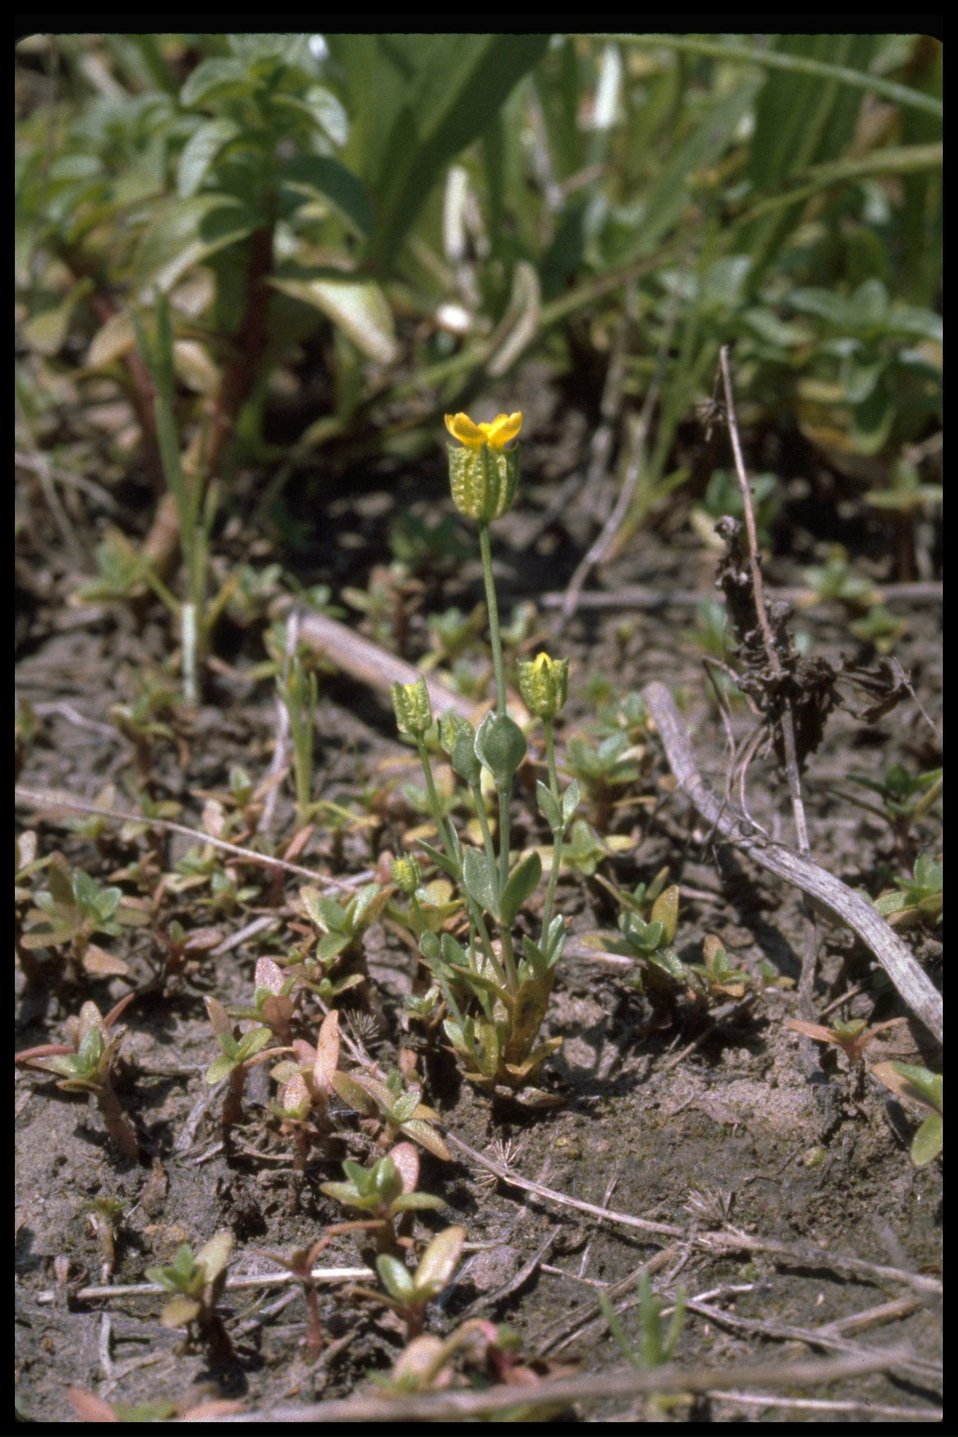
Cicendia quadrangularis, commonly known as Timwort.